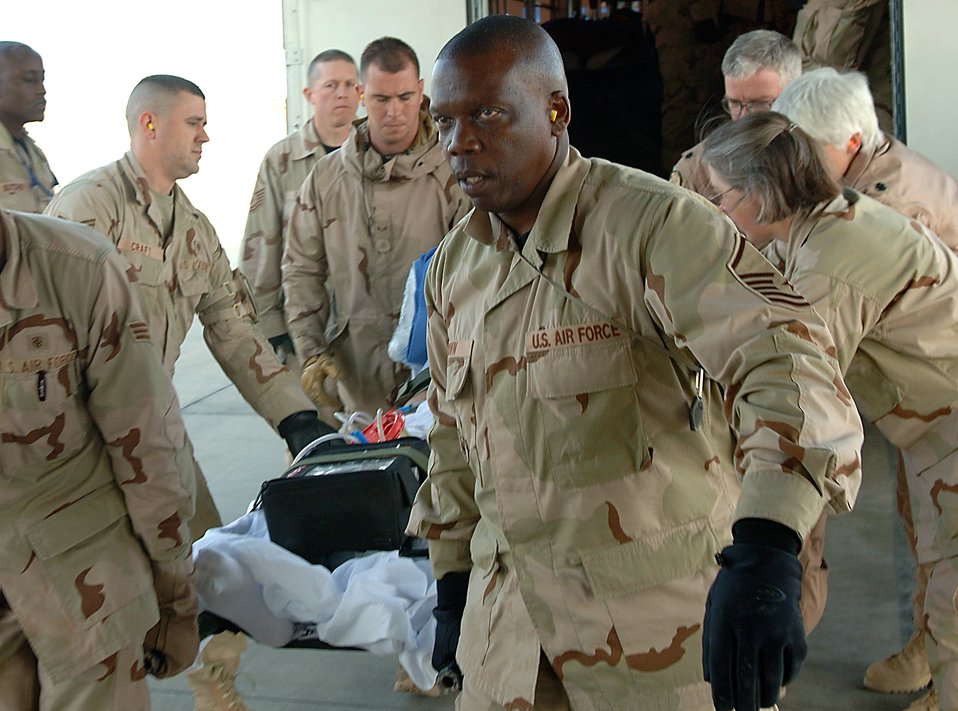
Reserve Airmen contributing to medical mission in Iraq

Master Sgt. James Brown helps carry a patient aboard a waiting Air Force Reserve C-17 Globemaster III for a medical evacuation flight from Balad Air Base, Iraq to Landstuhl Regional Medical Center, Germany, for further treatment. Sergeant Brown is assigned to the 332nd Expeditionary Medical Group and is from the Air Force Reserve's 920th Aeromedical Staging Squadron at Patrick Air Force Base, Fla. The Globemaster is from March Air Reserve Base, Calif.